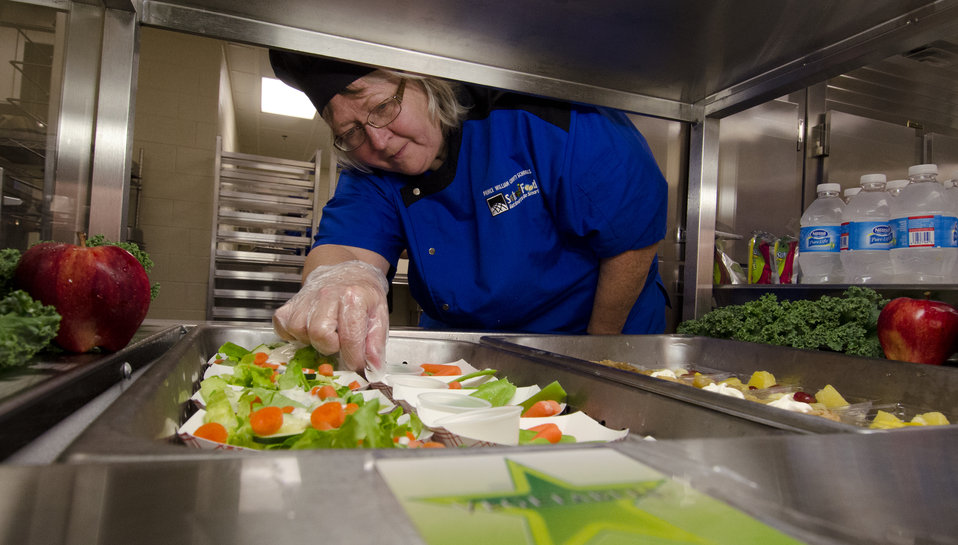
School lunch staff and students enjoy the new school lunch menu created to meet the new standards at the Yorkshire Elementary School in Manassas, VA on Friday, Sept. 7, 2012.